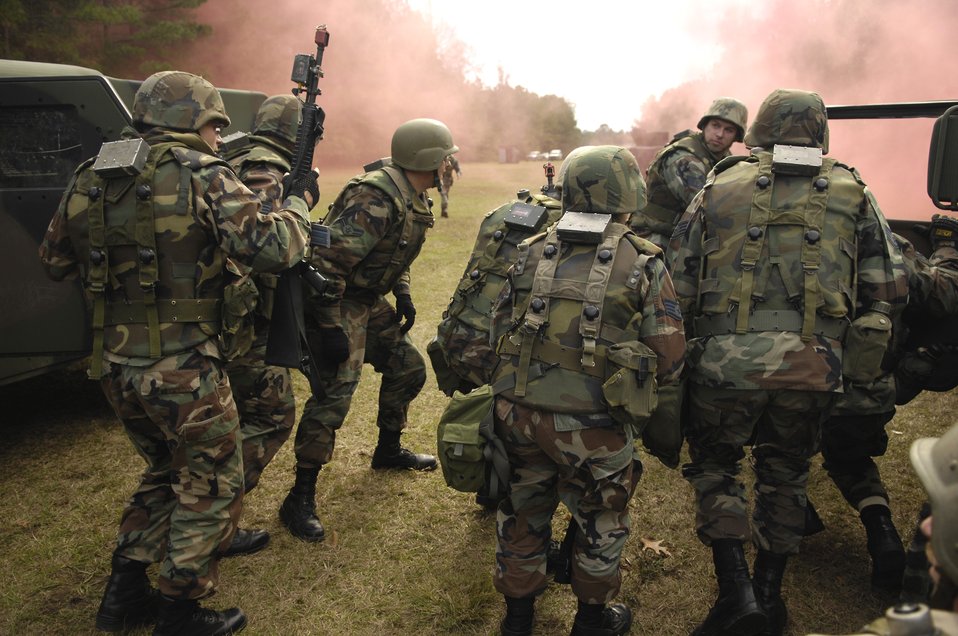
Testing their skills

Members of the 437th Airlift Wing cross load through smoke after a vehicle in their convoy was struck by a simulated improvised explosive device during the Expeditionary Combat Skills Training Dec. 7 at Charleston Air Force Base, S.C. The ECST is a three-day tactical operations course to prepare Charleston Airmen for future deployments.